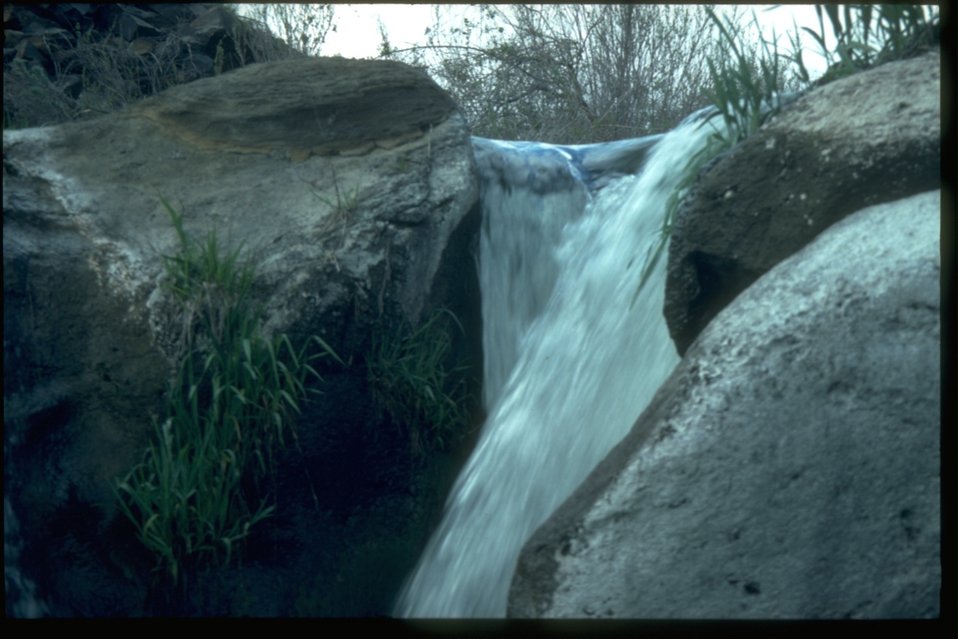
Douglas Creek waterfall in Grant County, WA.